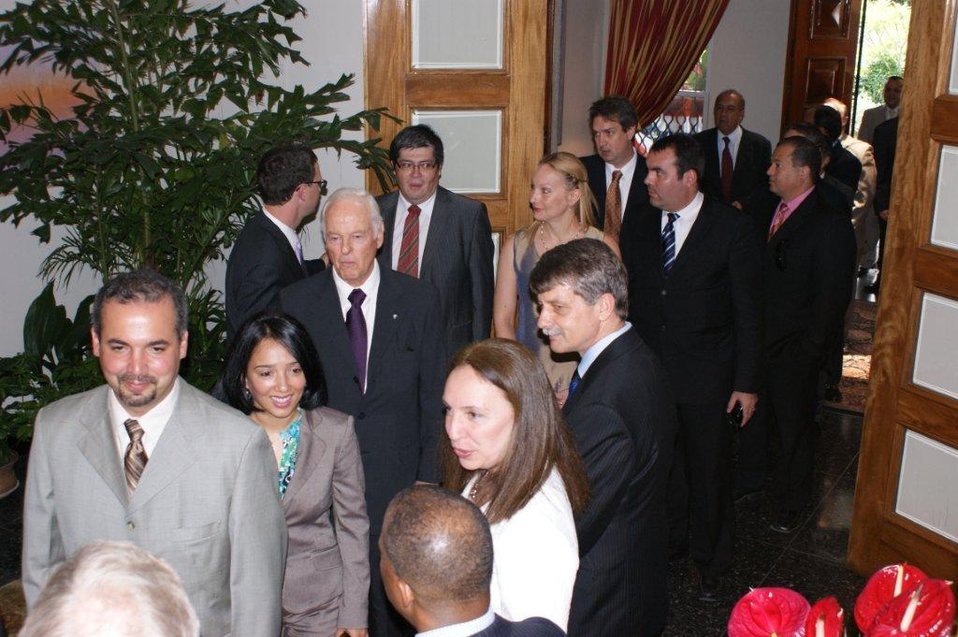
July 4th Celebration at U.S. Embassy in Guatemala

More than 700 guests attend the U.S. Independence Day celebration at the Ambassador's Residence in Guatemala City, Guatemala, on July 2, 2010.